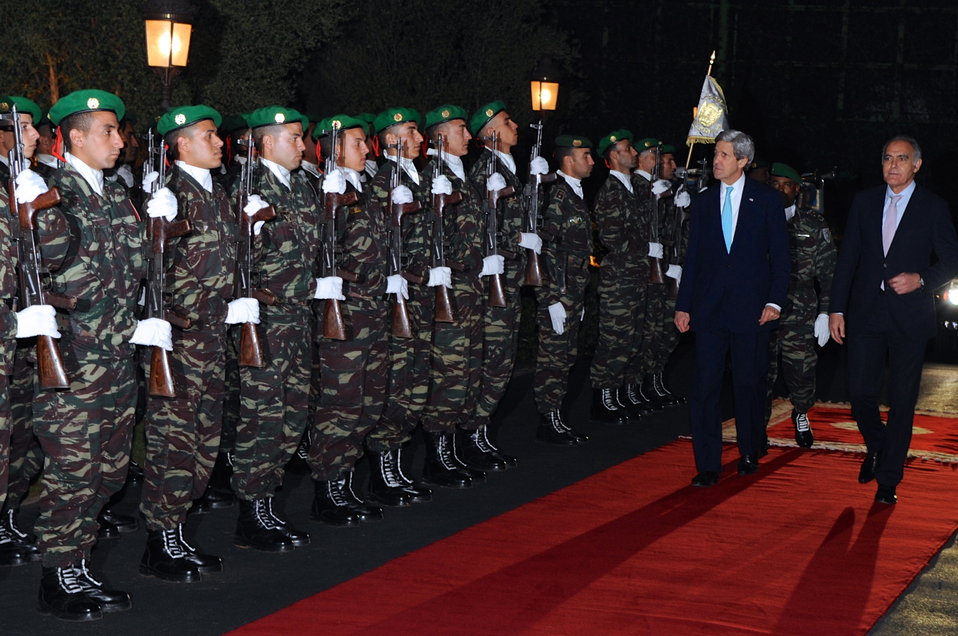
Secretary Kerry, Morrocan Foreign Minister Mezouar Pass Honor Guard Before Working Dinner

Moroccan Foreign Minister Salaheddine Mezouar escorts U.S. Secretary of State John Kerry past an honor guard as he arrives for a working dinner at the Guest Palace Residence in Rabat on April 3, 2014.